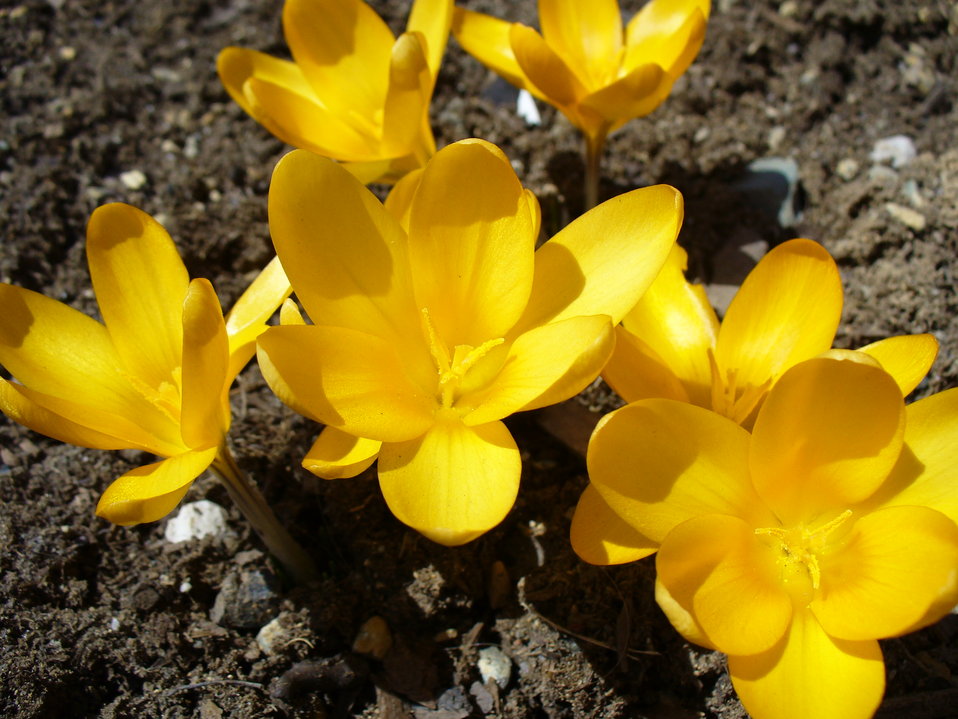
I am the originator of this photo. I hold the copyright. I release it to the public domain. This photo depicts Crocus flowers.